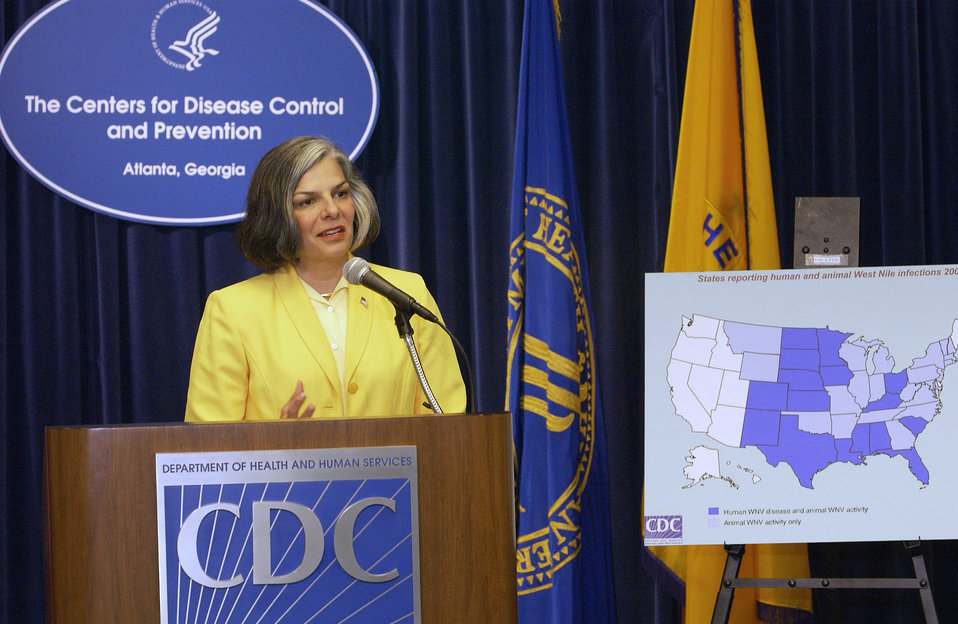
This was former CDC Director (2002 - 2008), Julie Louise Gerberding, MD, MPH, speaking at an August, 2003 West Nile Virus press briefing.